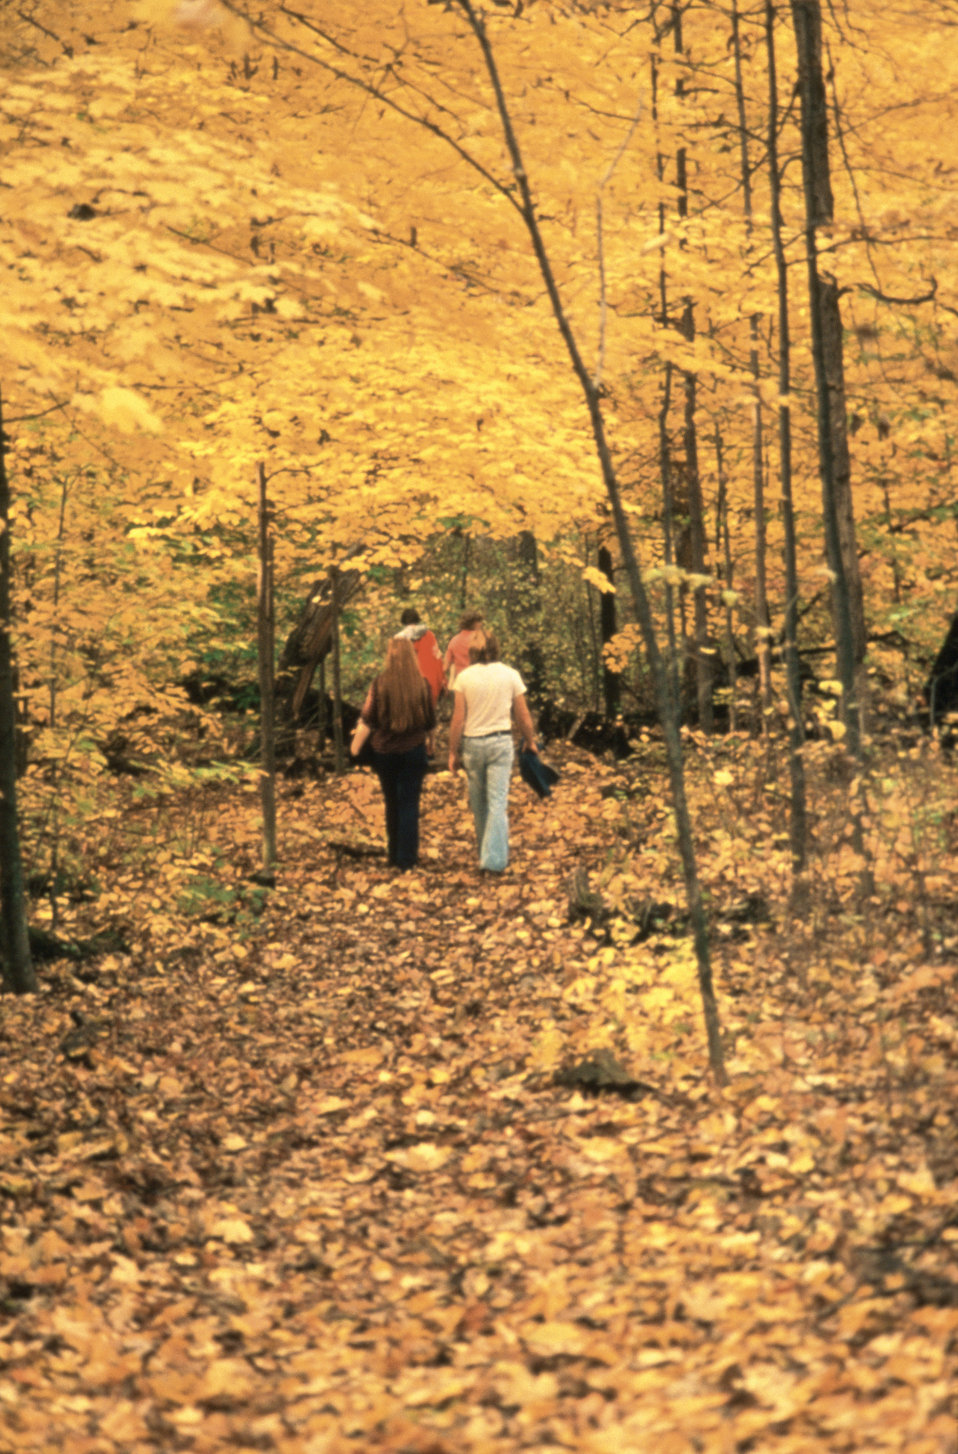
fall walk